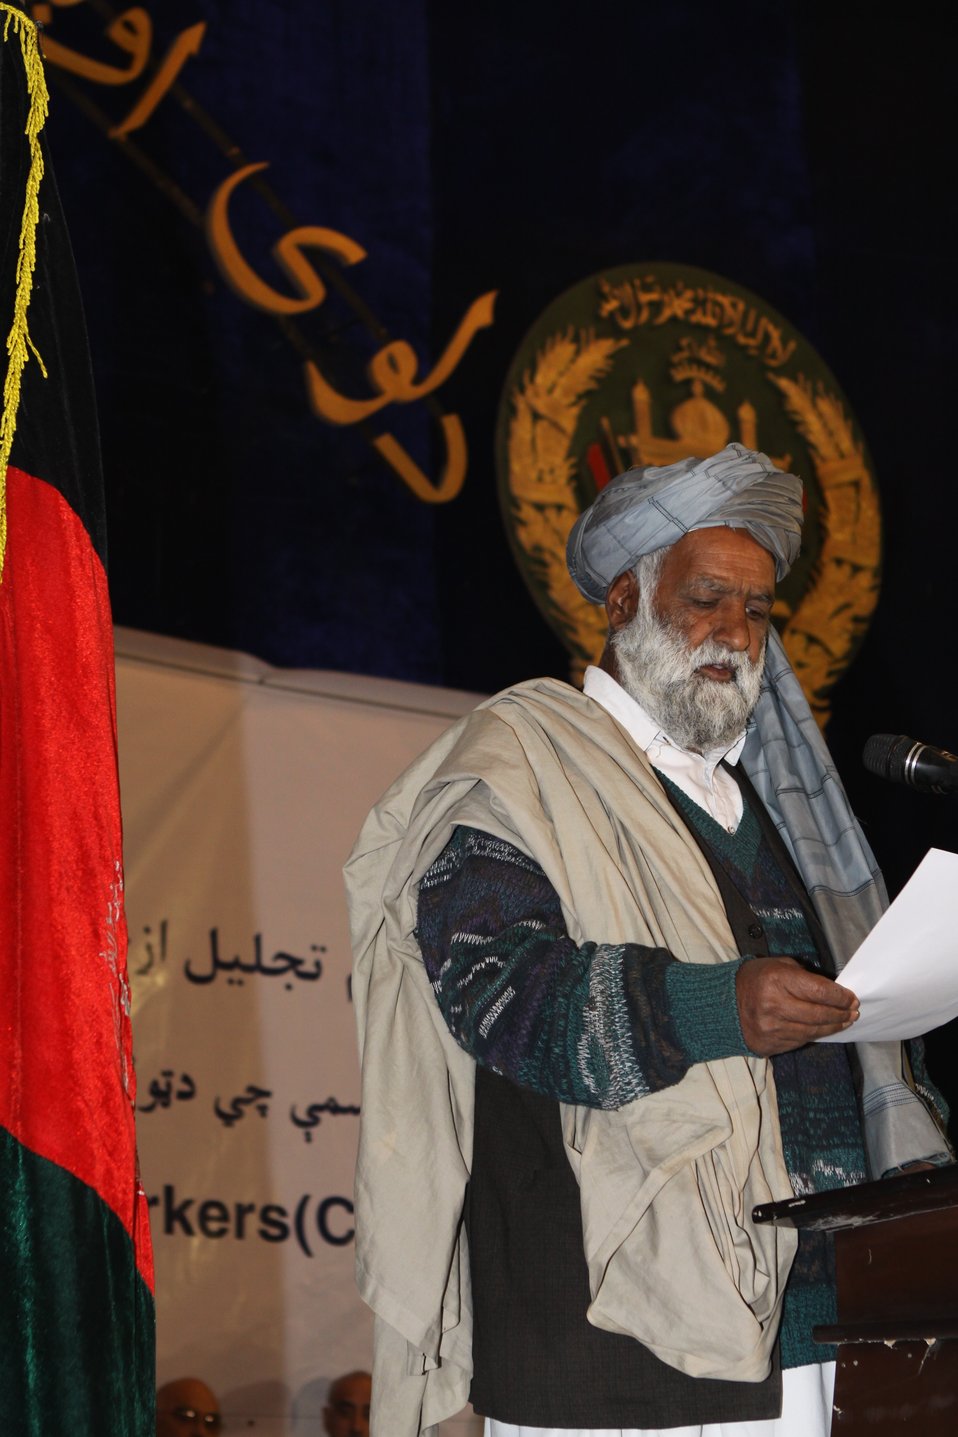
Community Health Workers Celebrated

Kabul, Afghanistan | December 5, 2010 — In support of the United Nations designated International Volunteer Day for Economic and Social Development, Afghanistan’s Ministry of Public Health celebrated its annual Community Health Worker Day today. Acting Minister of Public Health Dr. Suraya Dalil, USAID Senior Deputy Mission Director Robert Hellyer, other government officials, and international donors joined in recognizing the critical contribution of community health workers in Afghanistan and encouraging them to continue their voluntary support to their communities.
The event praised the contributions of the more than 22,000 volunteers throughout the country who deliver community level health-education, counseling, and services out of village health posts located in private homes. The Ministry of Public Health envisioned that community-based healthcare programs will actively encourage communities and families to adopt healthy lifestyles and behaviors, and provide families access to high quality and socially acceptable preventative medicine and life-saving services.
“We have 22,000 community health workers in Afghanistan that are able to implement the basic and standard medicines. They all have been trained through a job description,” said Minister Dalil. Addressing the health workers, she added, “I am proud and feel powerful that I have people like you.”
USAID-funded health projects collaborate closely with the Ministry of Public Health to improve the health and nutritional status of Afghans, provide quality primary healthcare, and promote healthy behaviors at the community and household-levels. USAID supported the training of more than 9,000 of the volunteer community health workers currently working in Afghanistan.
“On behalf of the American people, I congratulate the Community Health Workers for their diligence to gain the skills and knowledge necessary to serve their communities in this important role,” said USAID Senior Deputy Mission Director Hellyer. “USAID strongly supports community based health care and believes that quality community-based health services are essential to reaching Afghanistan’s Millennium Development Goals.”
To support the Basic Package of Health Services, USAID assisted in developing the community health worker training manual, helped train community health worker supervisors and master-trainers, facilitated in-service training, and produced and developed reporting tools, job aids, and education materials.